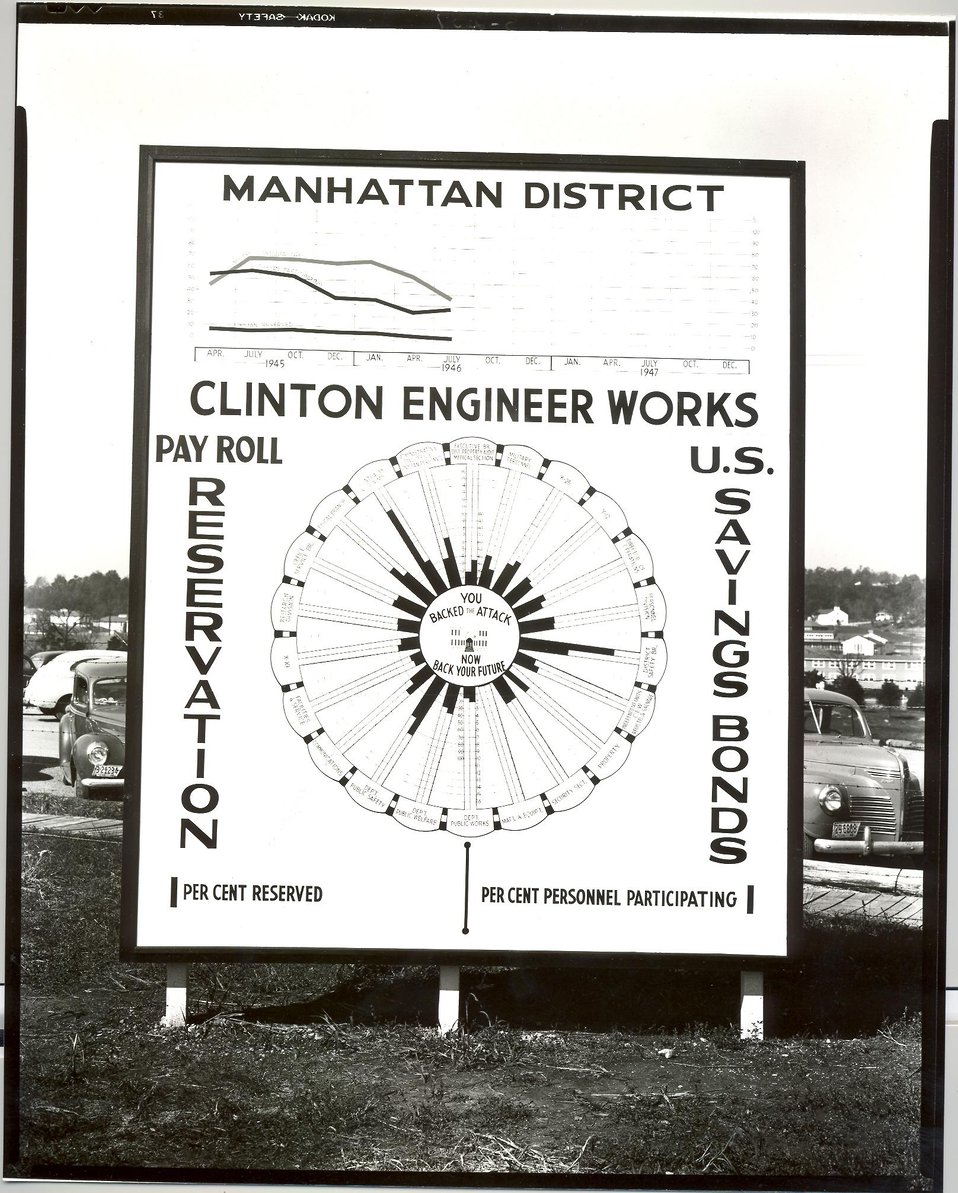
Graph Showing Percentage of CEW Participating in Bond Dr